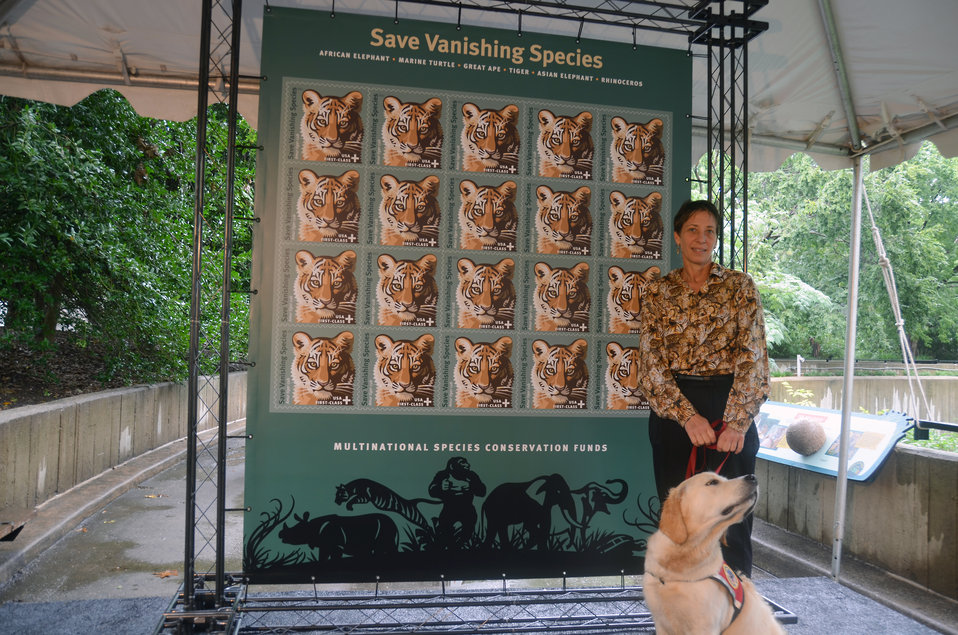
Save Vanishing Species Stamp First Day of Issue